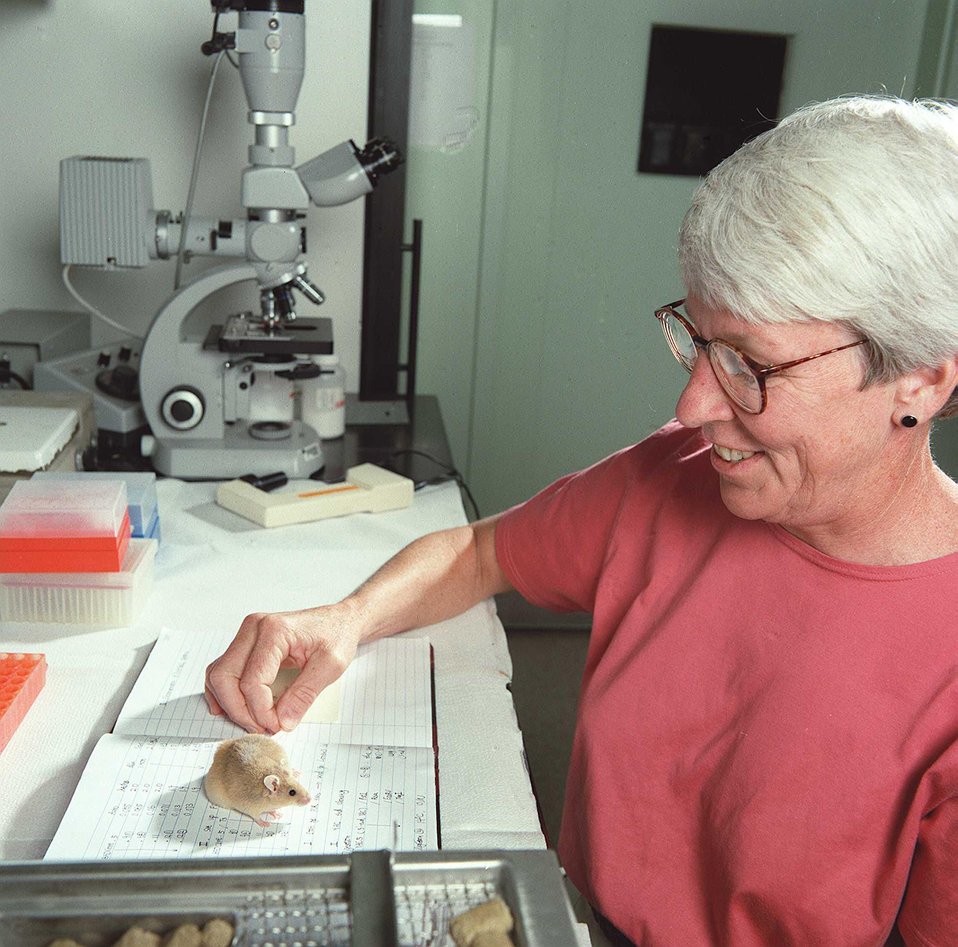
A SCIENTIST EXAMINES A MOUSE IN THE ORNL MOUSE HOUSE HOME TO SOME 60,000 PEDIGREED MICE.

RESEARCHERS AT OAK RIDGE NATIONAL LABORATORY HAVE DEVELOPED A WAY TO TRANSFER MOUSE STOCKS VIA THE EMBRYO. THIS WILL PERMIT ORNL TO SHARE ITS 3,500 STRAINS OF RESEARCH MICE FOR STUDIES AMONG SEVEN PARTNERS IN THE TENNESSEE MOUSE GENOME CONSORTIUM. IN ADDITION, MOUSE STOCKS WILL BE TRANSFERRED INTO THE NEW PATHOGEN-FREE MOUSE FACILITY BEING BUILT AT ORNL.